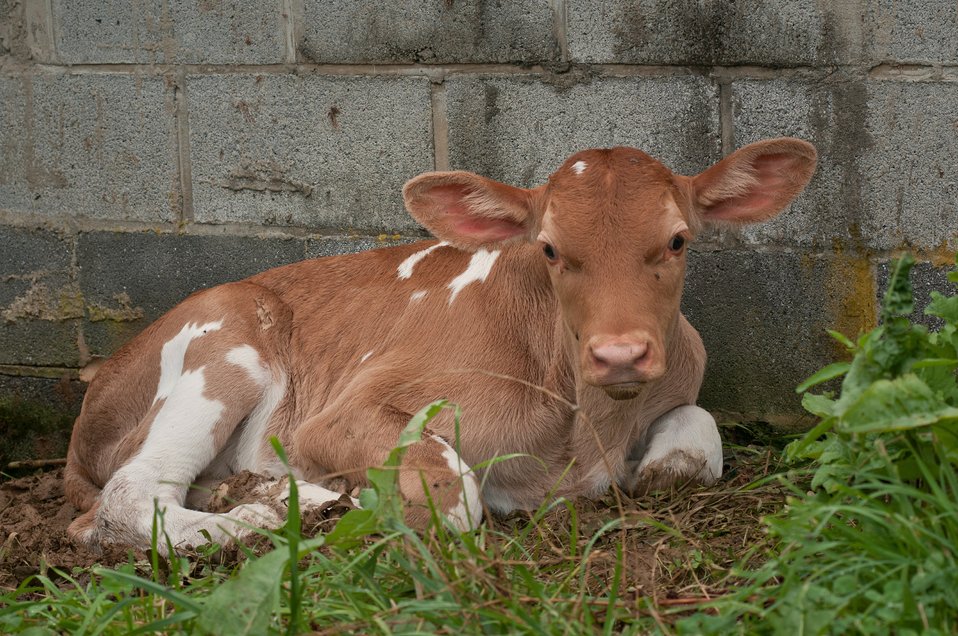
Less than a week old, this Guernsey calf weighs in at more than 170 pounds, and finds morning comfort against a cinderblock wall, on some soft ground, after an evening of summer rain at Nick’s Organic Farm, in Adamstown, MD, on Friday, July 12, 2013. She may grow up to provide nutritious Guernsey milk at the farm. The farm, owned by Nick Maravell, produces Black Angus beef, chicken, turkey, eggs, hay, soybeans, corn, alfalfa, orchard grass, rye; and other crops. The cattle are 100% grass-fed receiving certified organic pasture, certified organic hay (in winter), water and mineral salts mixed with sea kelp. The cattle are not fed hormones, antibiotics or animal products. Poultry feed from grain is ground from organic grain. The poultry also graze on organic pastures. The farm has conducted on-farm research with federal, state and non-profit agencies to refine organic practices. An organization such as the U.S. Department of Agriculture (USDA) Agricultural Research Service (ARS) center in Beltsville has been able to conduct research to improve organic crops and to breed and manage the cattle so that they have.